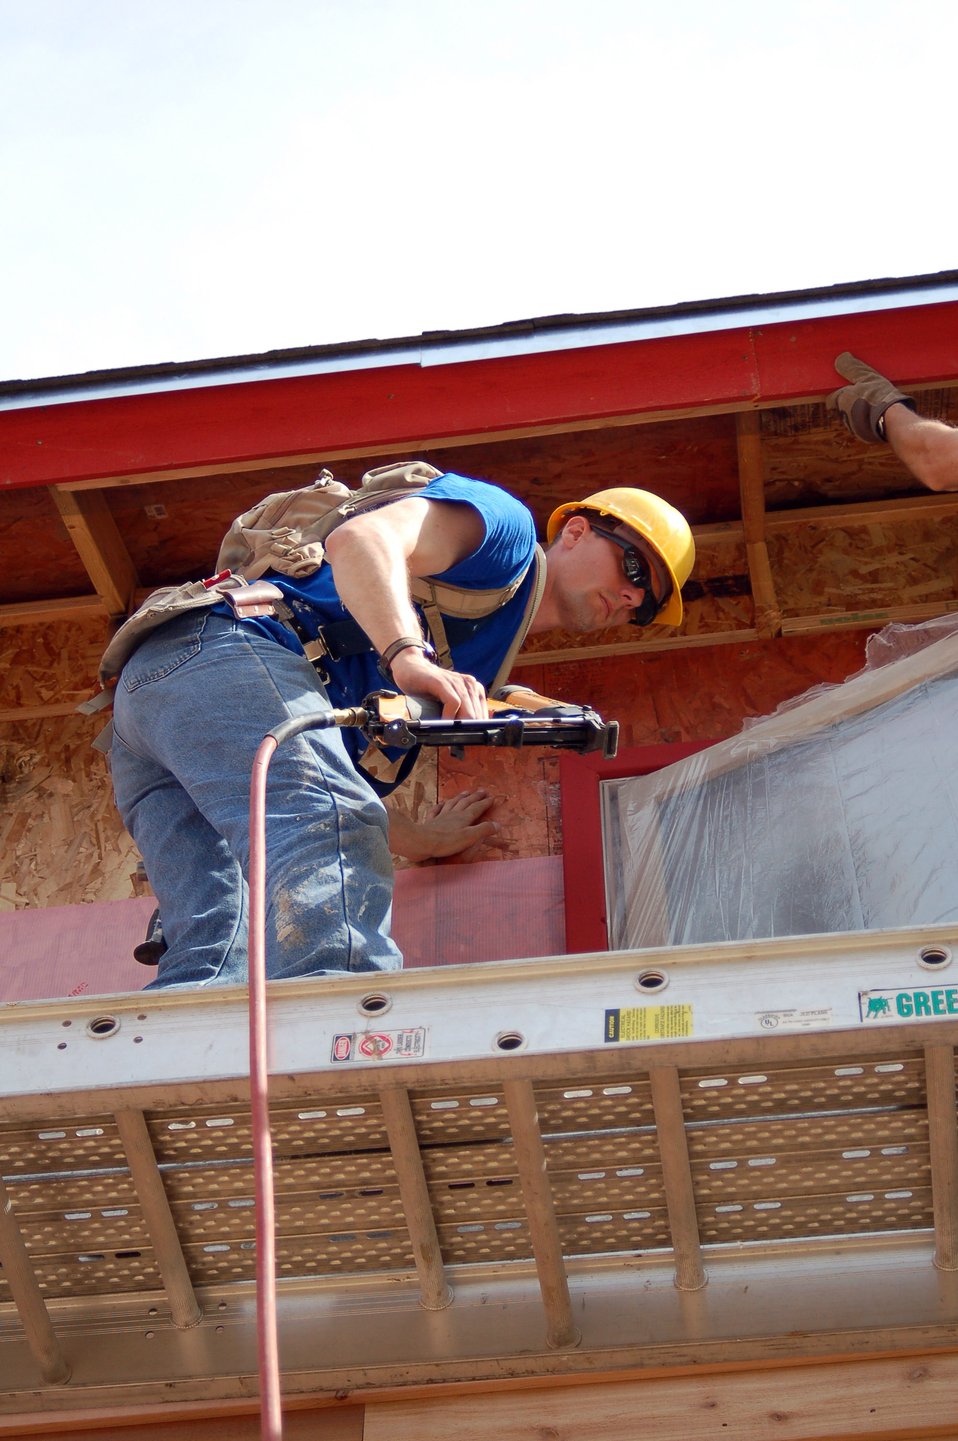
'Extreme Makeover: Home Edition,' military style

Tech. Sgt. Brenton Keay helps hang soffit on a new home built for ABC's